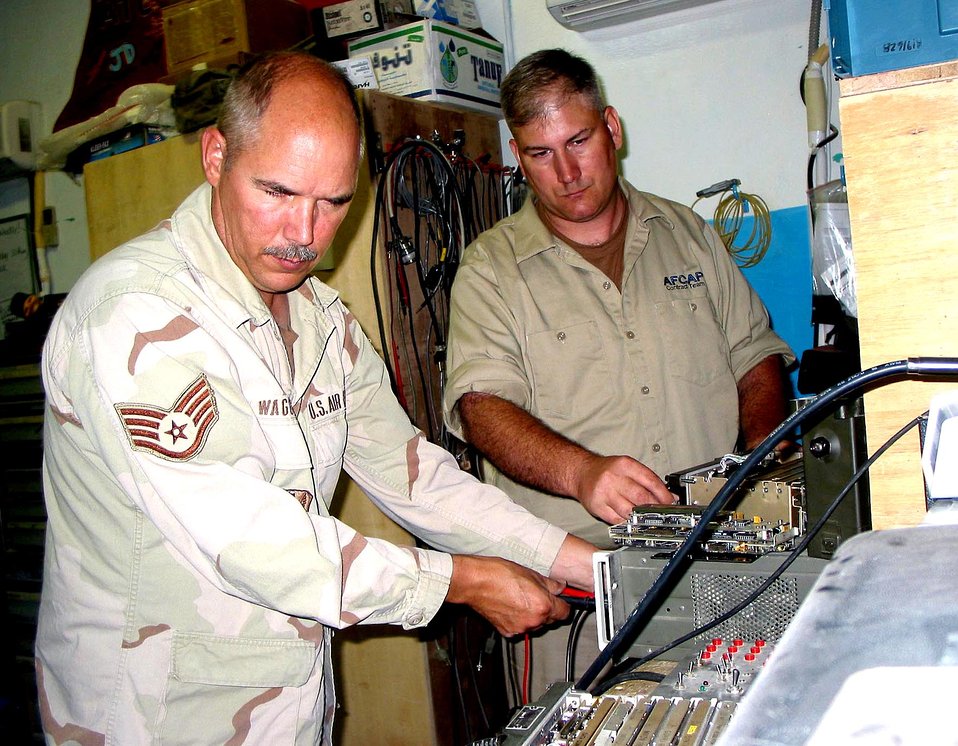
Troubleshooter

BAGRAM AIR BASE, Afghanistan - Staff Sgt. Brian Waggoner (left), 455th Airfield Operations Squadron, shows contractor Jeff Bryant the RT1319 radio used in the control tower here. They are troubleshooting a maintenance problem with the radio used to talk to aircraft. Bryant will replace Waggoner in September.